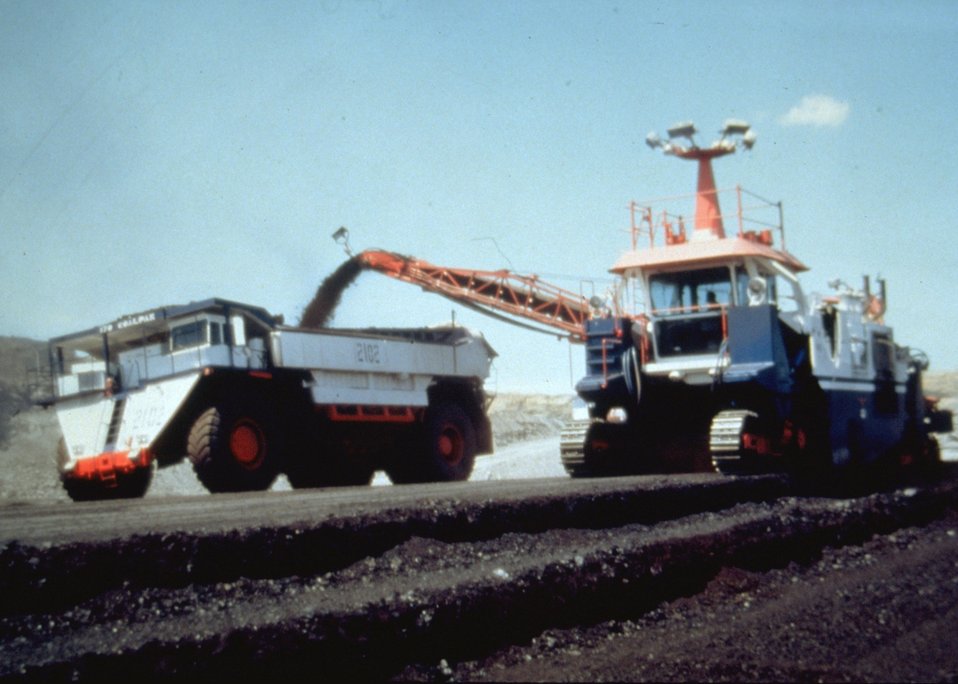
Coal bed methane development.